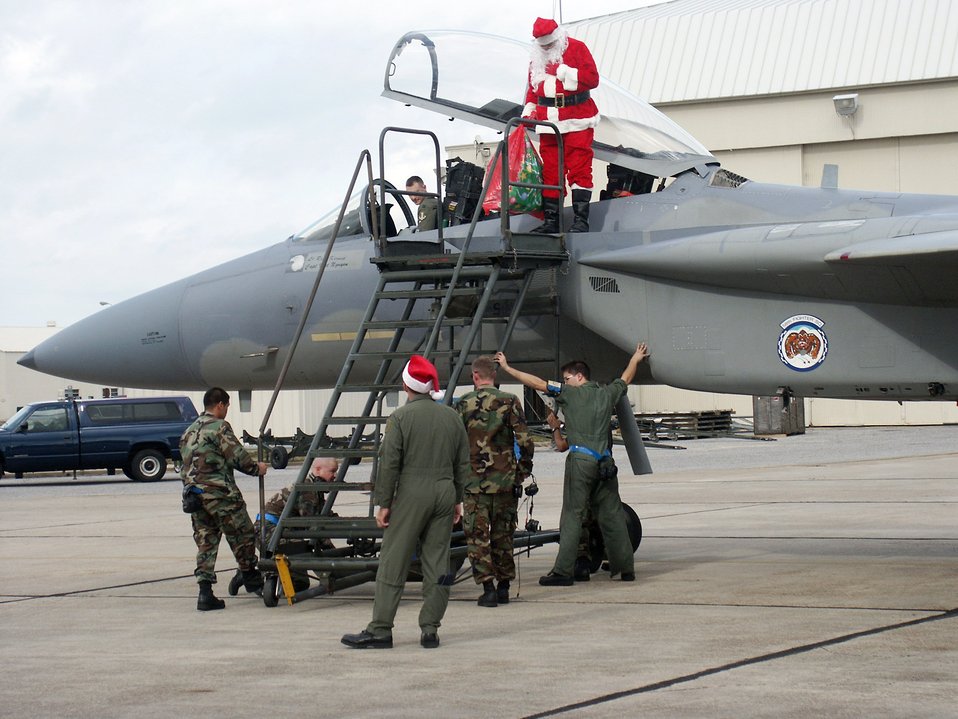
Early visit

EGLIN AIR FORCE BASE, Fla. (AFPN) -- Santa Claus gets off an F-15 Eagle a few weeks early to spread Christmas cheer to children here. Santa entertained the children during the 33rd Fighter Wing's Christmas party.